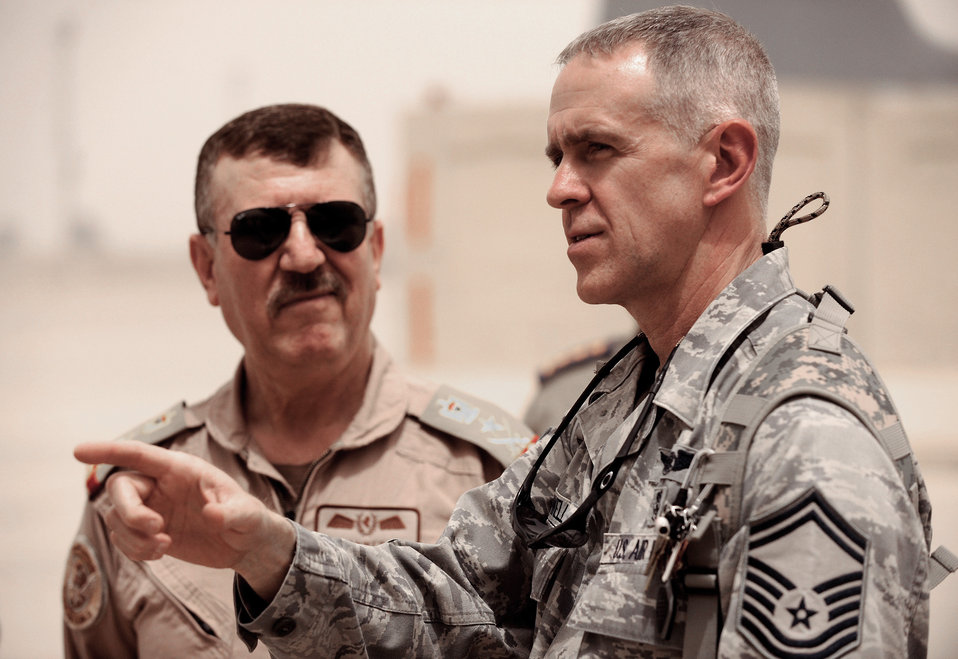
Advisors from 3 bases converge for evacuation training

Senior Master Sgt. Marvin Howell speaks with Iraqi air force Chief of Staff Lt. Gen. Anwar Ahmed as Iraqi medics practice litter carrying commands May 19, 2011. Six Iraqi air force medics received two days of joint aeromedical evacuation training with Air Force and Army advisers. Sergeant Howell is the 332nd Expeditionary Medical Operations Squadron superintendent.